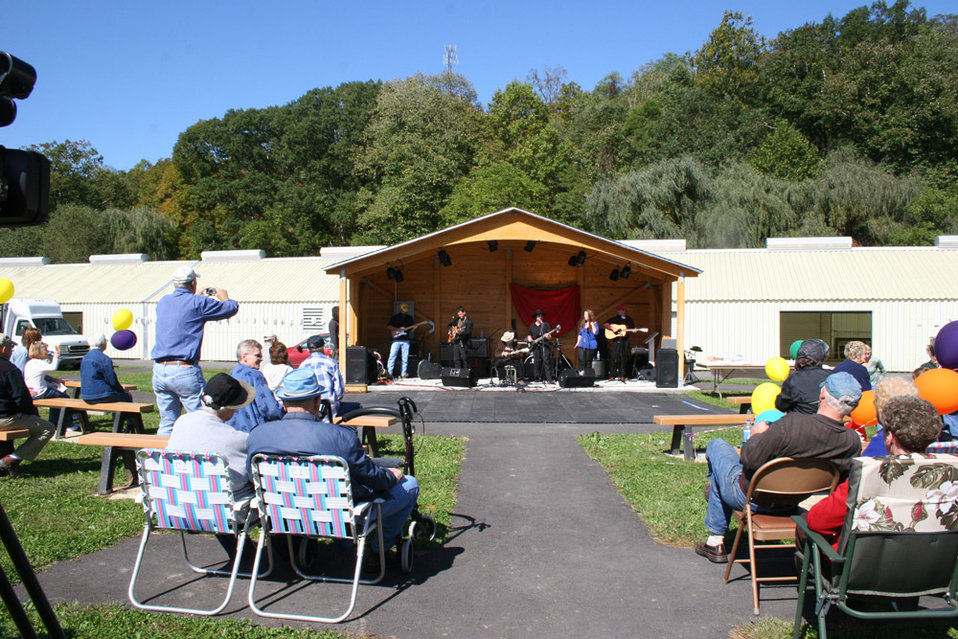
Freshwater Folk Festival

The 5th Annual Freshwater Folk Festival at White Sulphur Springs National Fish Hatchery in West Virginia.Credit: USFWS